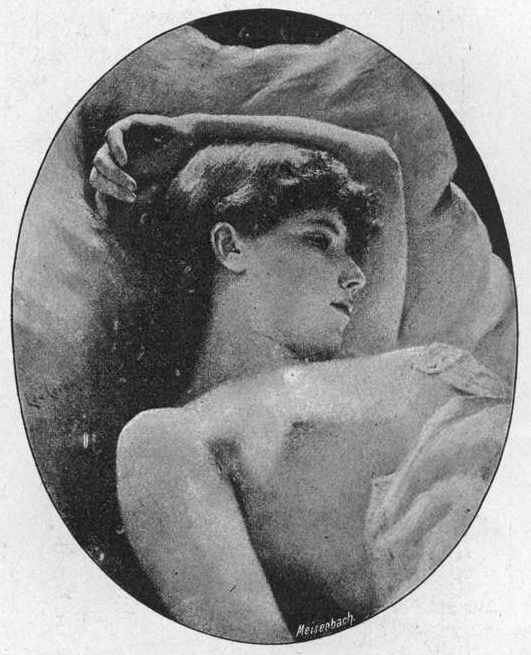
Erwacht